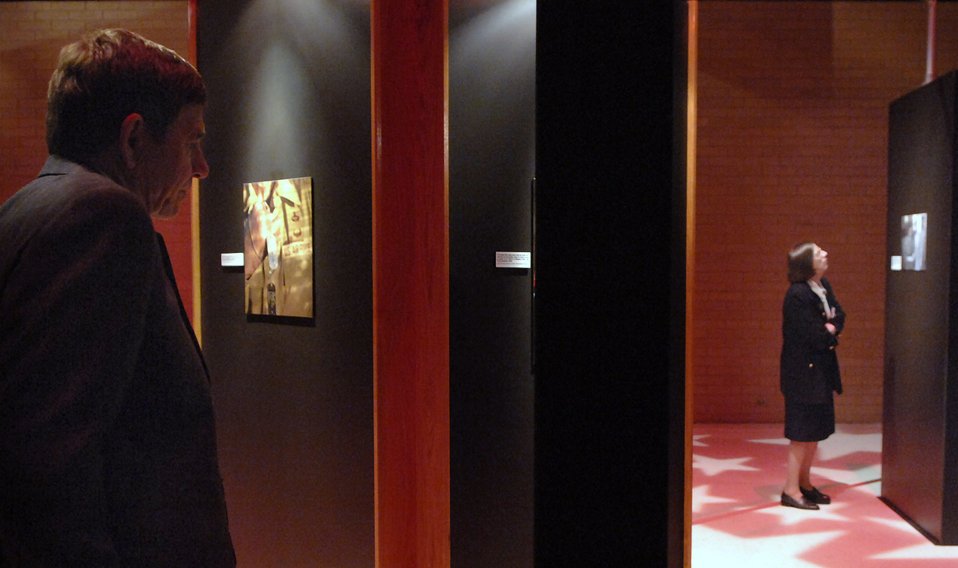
Air Force, military photographers recognized

Patrons study photographs on display at the